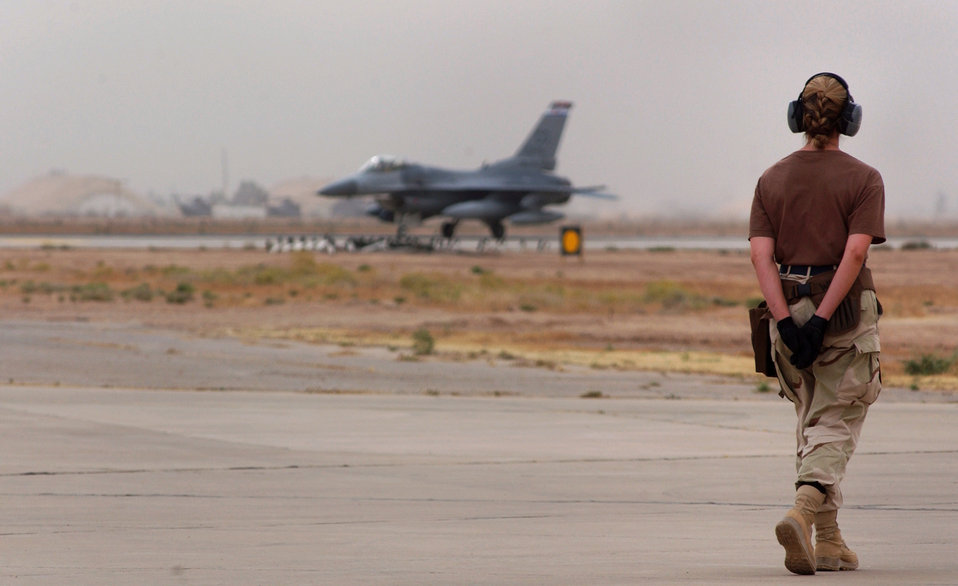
Waiting for taxi

BALAD AIR BASE, Iraq -- Staff Sgt. Jenny Romero waits for an F-16 Fighting Falcon to taxi after arriving here May 27. Sergeant Romero is a weapons specialist with the 332nd Air Expeditionary Wing.